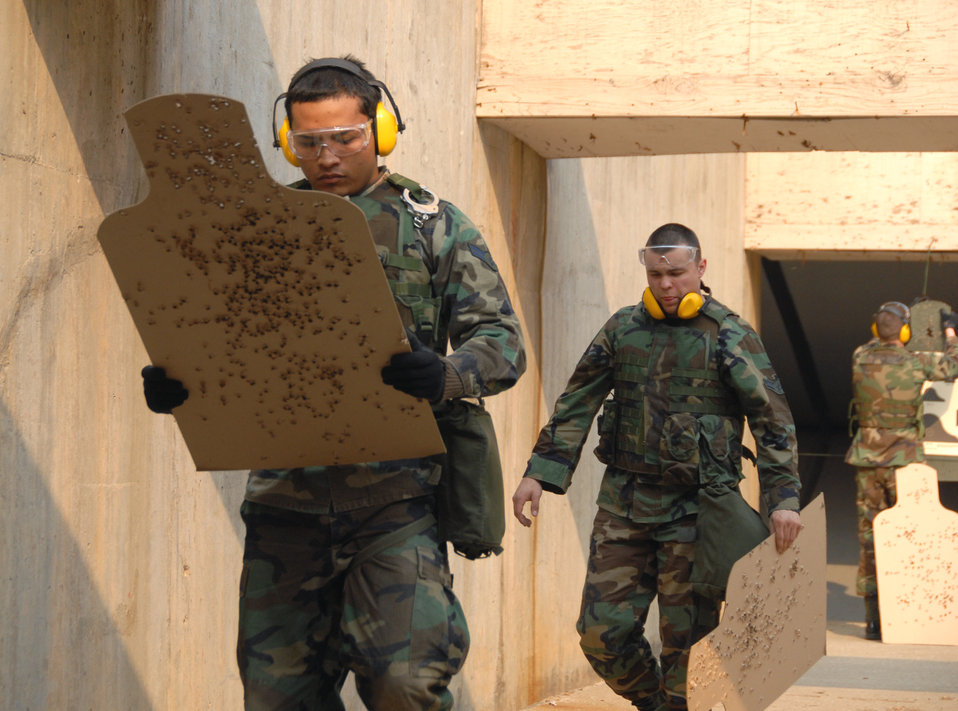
Keep firing

An Airman checks his target after firing at the at the Osan Air Base, South Korea, shooting range March 15. .